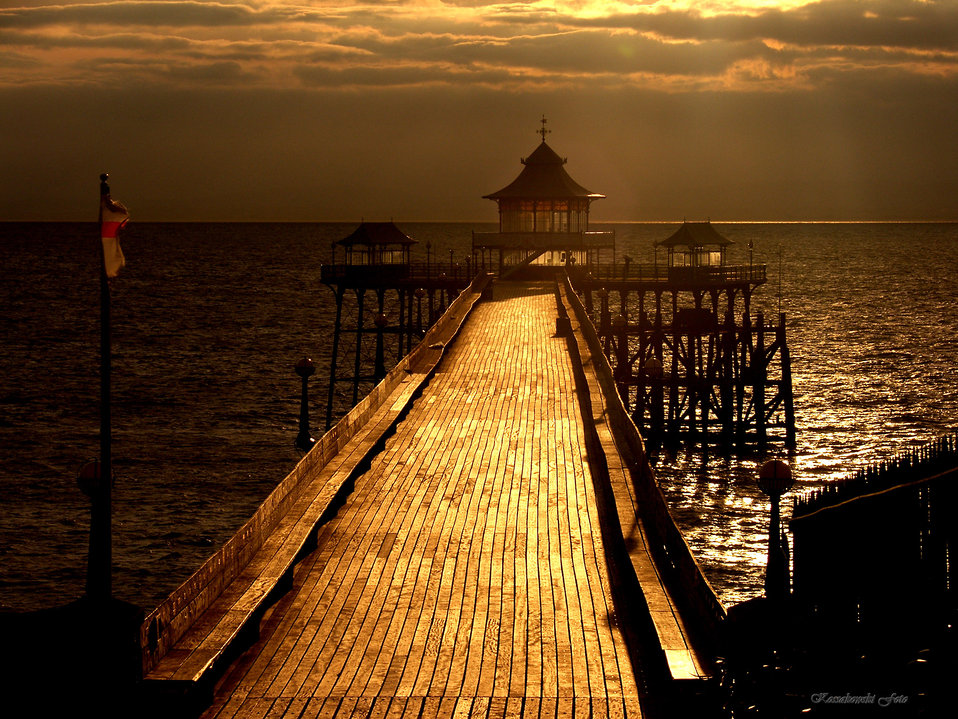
Pier in sun.